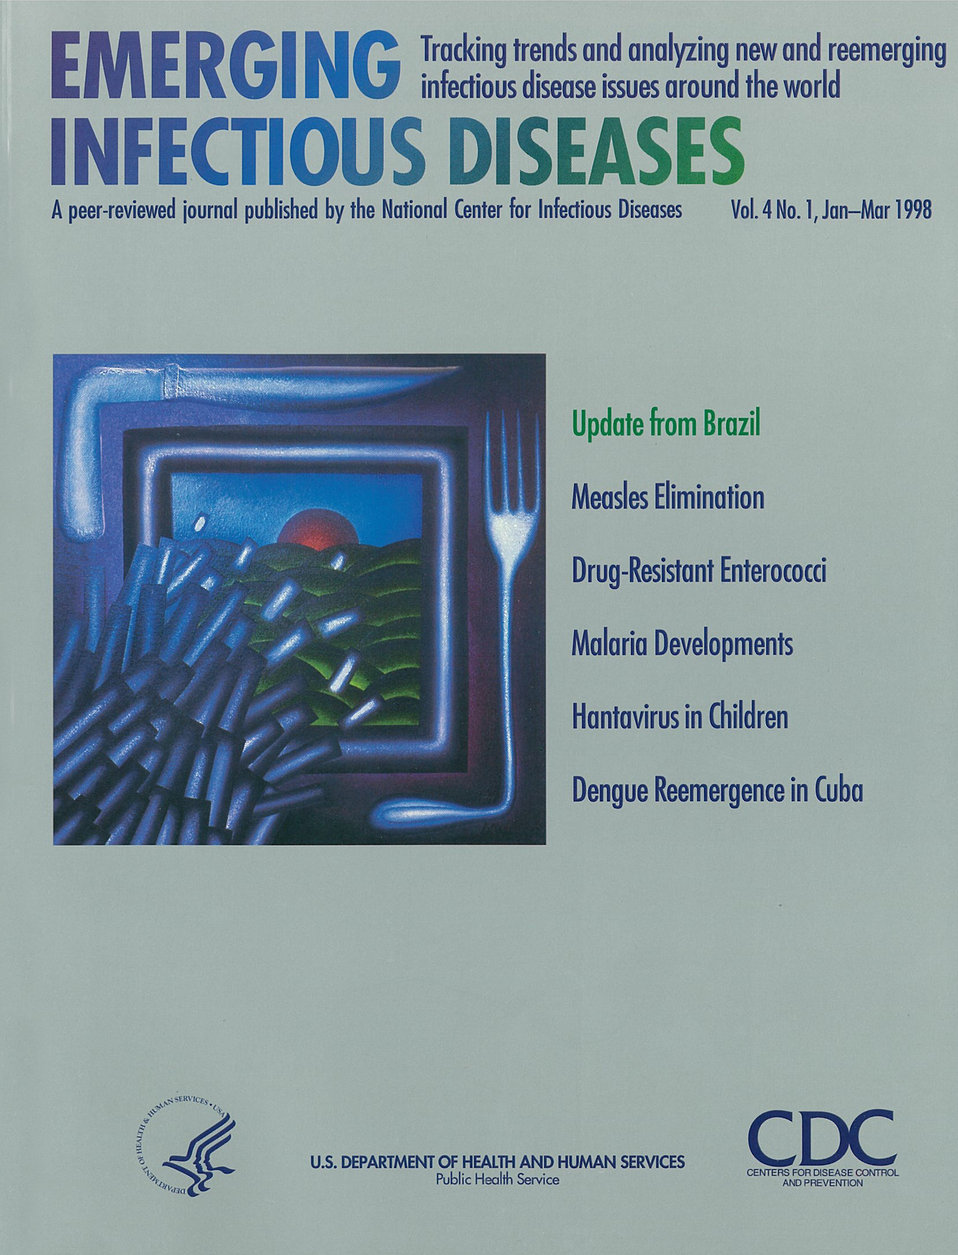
Emerging Infectious Diseases (EID) cover artwork for Volume 4, No.1, January-March 1998 issue.